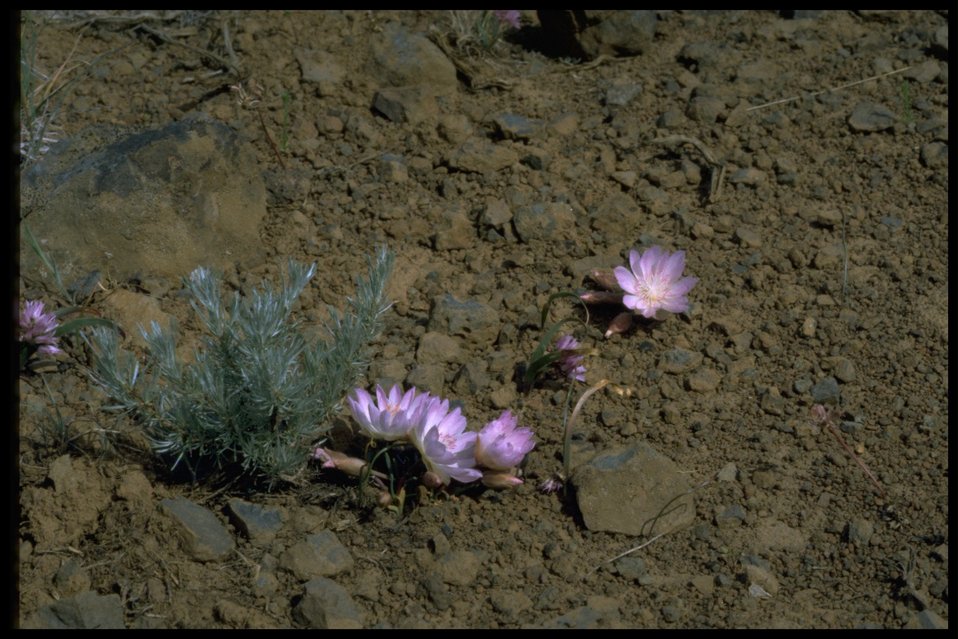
Farshot of Bitterroot wildflowers and stiff sagebrush